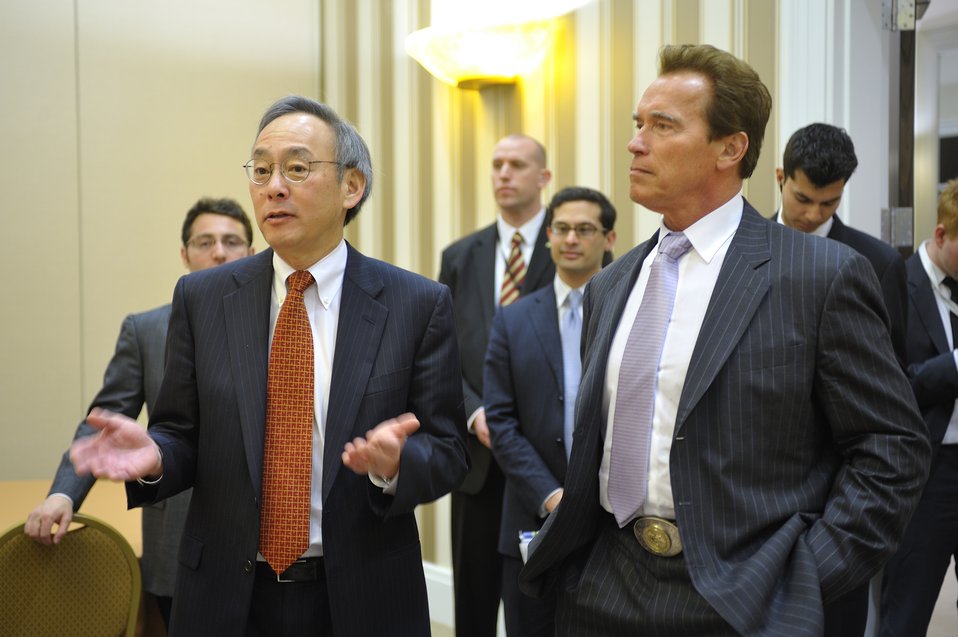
ARPA-E Energy Innovation Summit 2011, 5 of 83

Steven Chu, Secretary, United States Department of Energy and Arnold Schwarzenegger, Former Governor of California surprise graduate students who traveled to the summit.